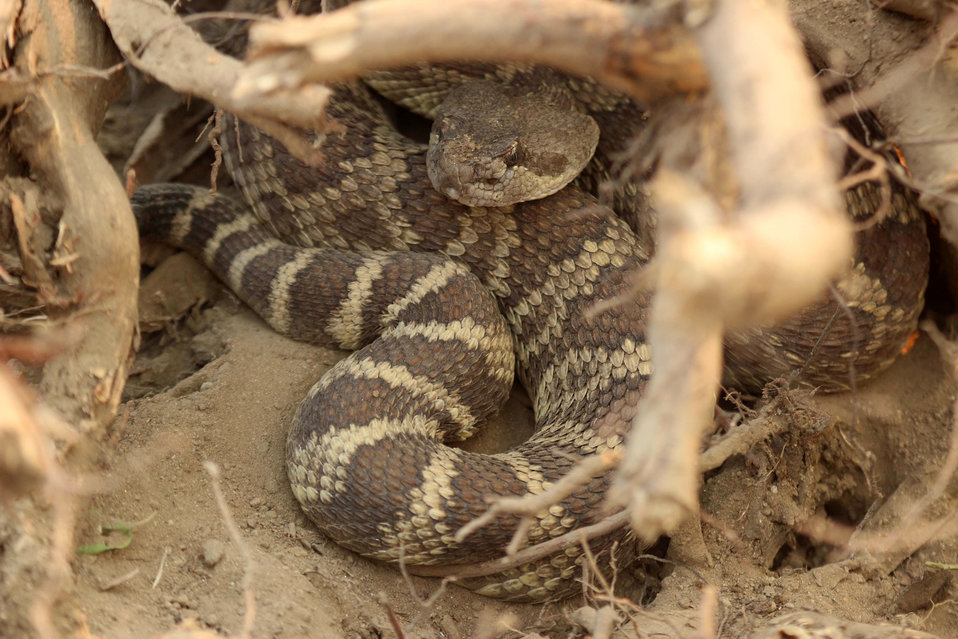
Firefighters face danger from rattlesnakes hidden in underbrush at the Rim Fire. The Rim Fire in the Stanislaus National Forest near in California began on Aug. 17, 2013 and is under investigation. The fire has consumed approximately 235,841 acres and is 70% contained.